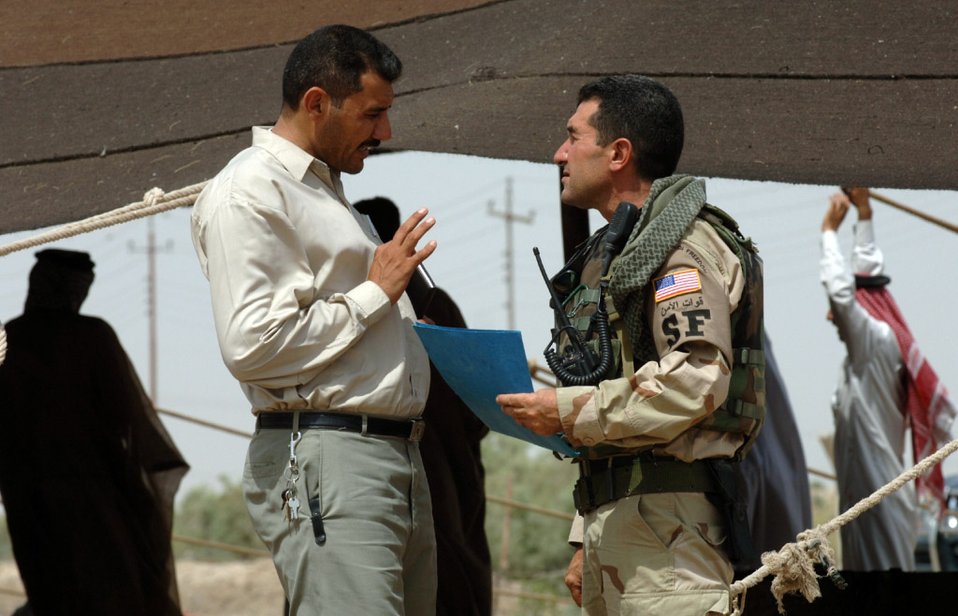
IRAQ -- Sam (right) talks to a local man. The Arab linguist talks to many leaders in the area, listening to their concerns and sharing ideas about the best ways to move forward. (His full name is not used for security reasons).